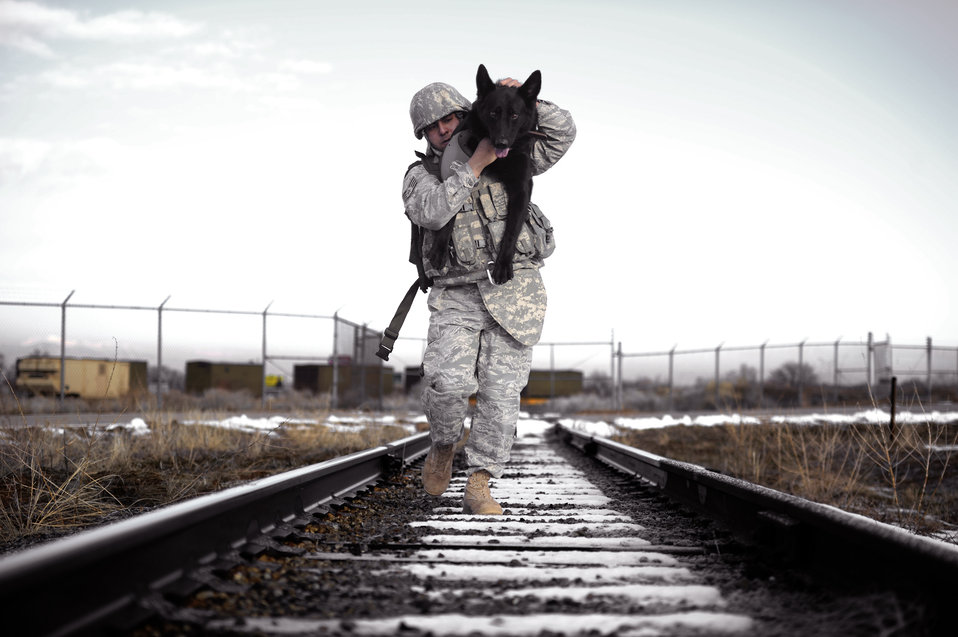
New pals

Staff Sgt. Erick Martinez, a military dog handler at Hill Air Force Base, Utah, uses an over-the-shoulder carry with Argo II March 4, 2011. This exercise helps build trust, loyalty, and teamwork for Sergeant Martinez and Argo II, who have only been working together for only two months.